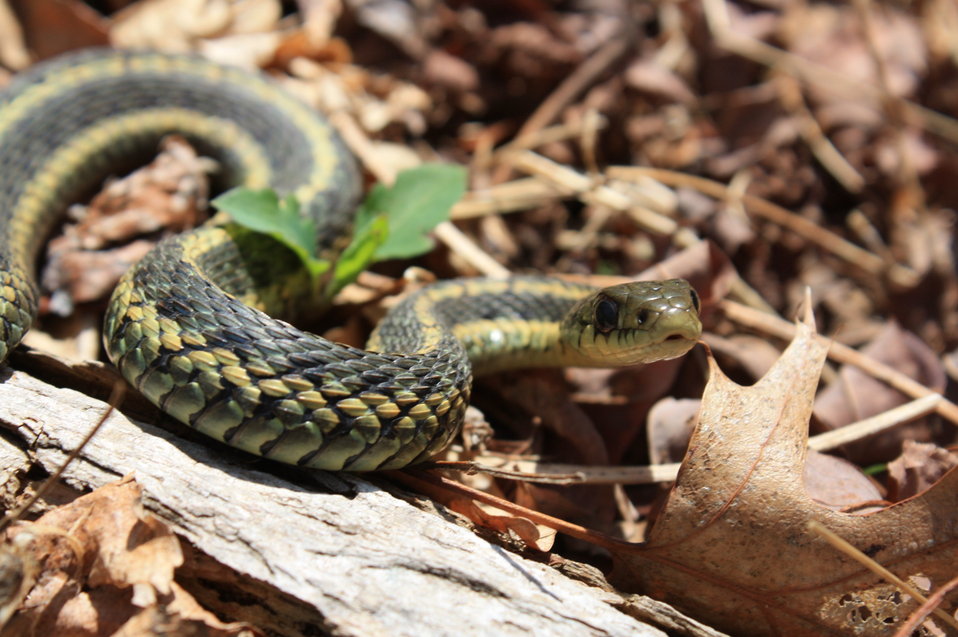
Garter snake at Conscience Point National Wildlife Refuge.